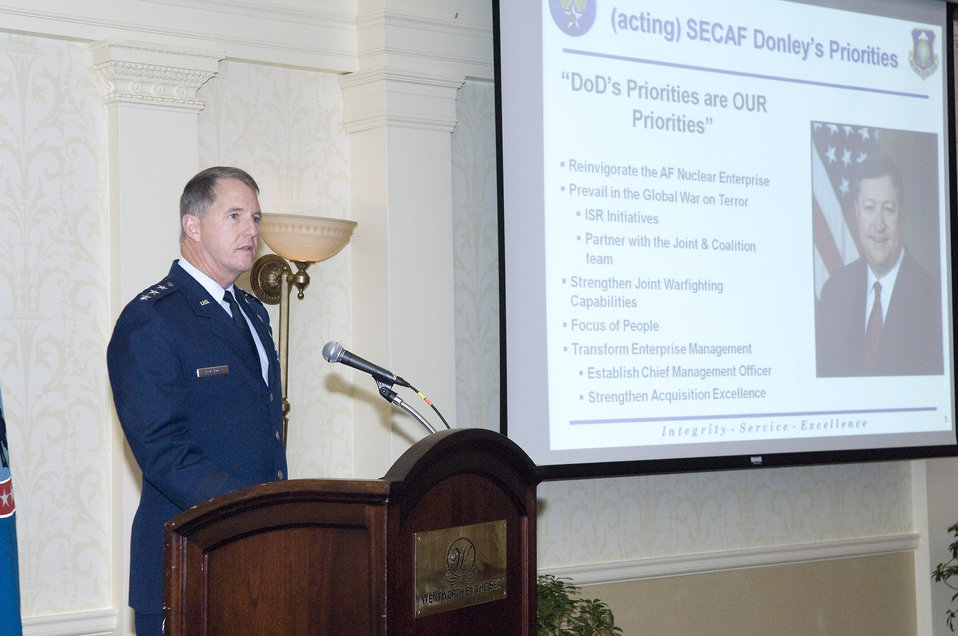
Conference speakers say users' needs matter most

Lt. Gen. Ted F. Bowlds addresses the the audience at the 6th annual Network Centric Operations Conference Sept. 22 in New Castle, N.H. Conference participants spoke about information sharing opportunities, technologies and potential risks. General Bowlds is the commander of the Electronic Systems Center.